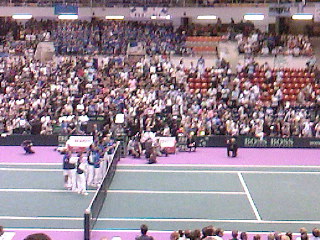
2010 Davis Cup semi-final France vs Argentina. After the doubles match, French team celebrates its 3-0 victory.